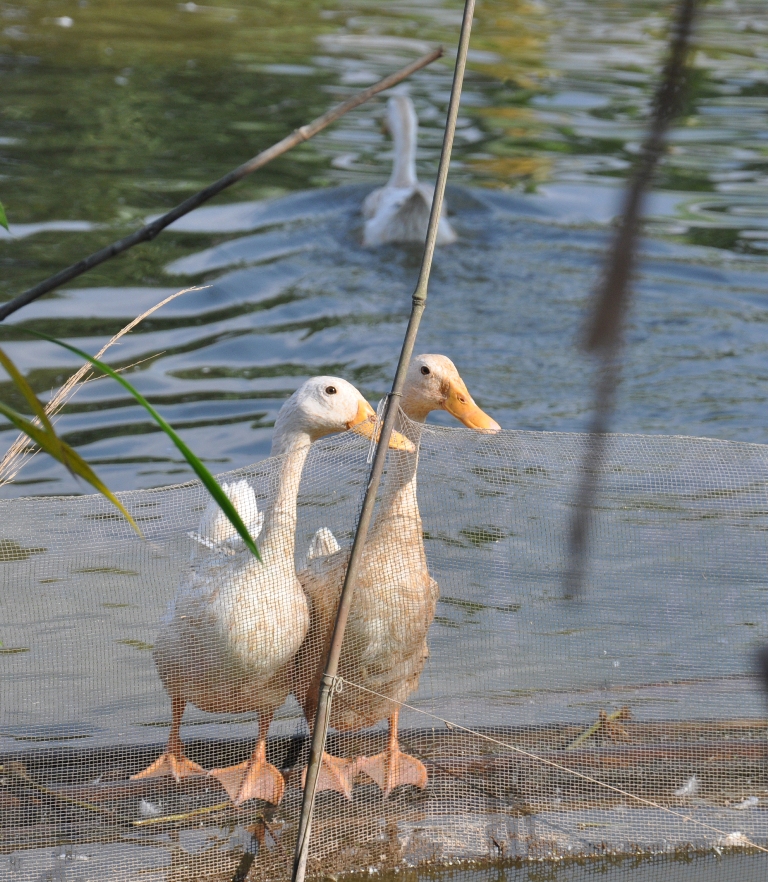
USAID supports the Government of Vietnam's efforts to control avian influenza in Vietnam.

Ducks in Ha Nam Province enjoy a quite, safe moment in their fenced pond.